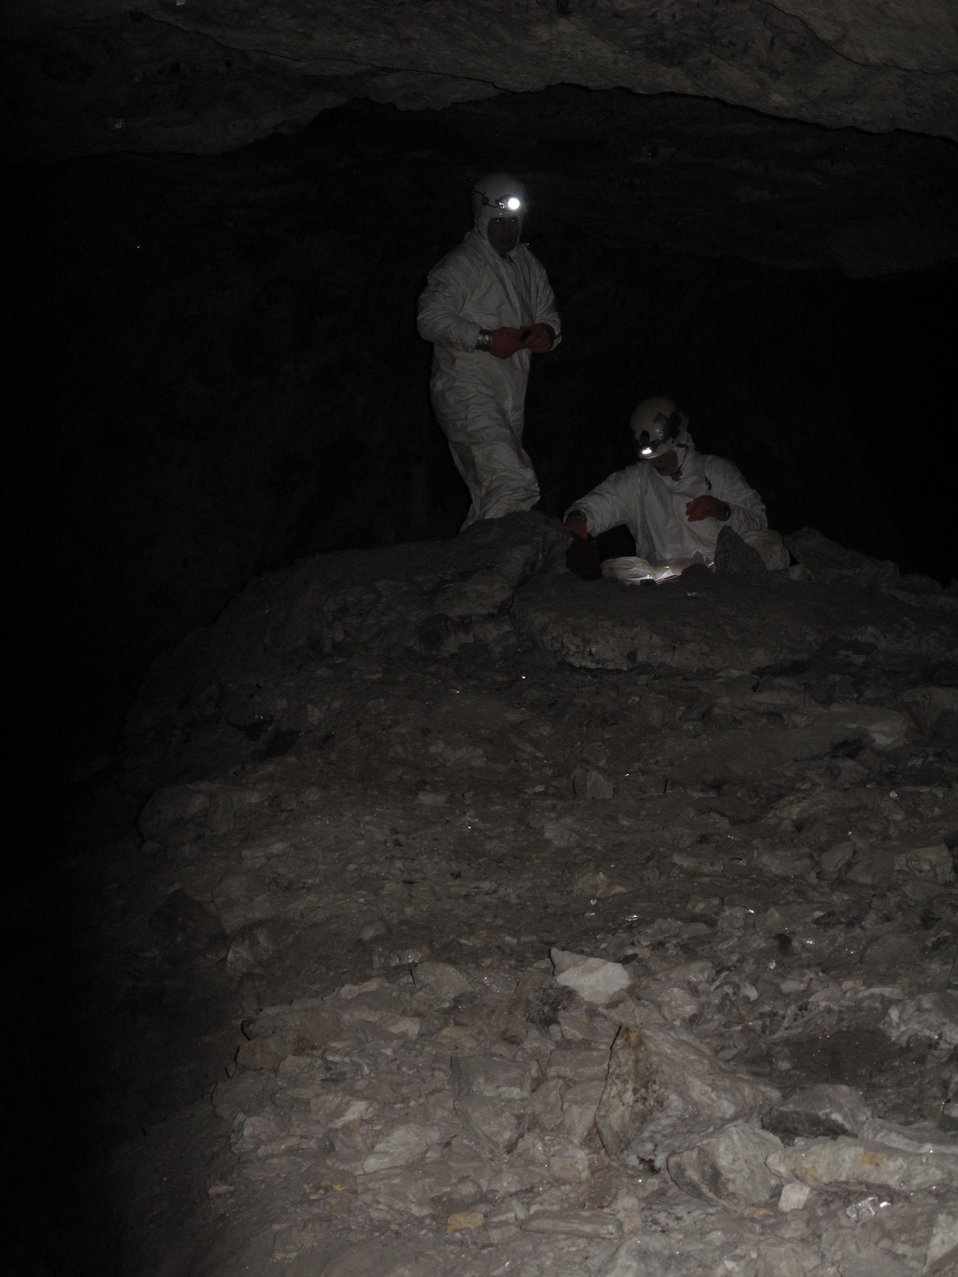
NCWRC biologists underground